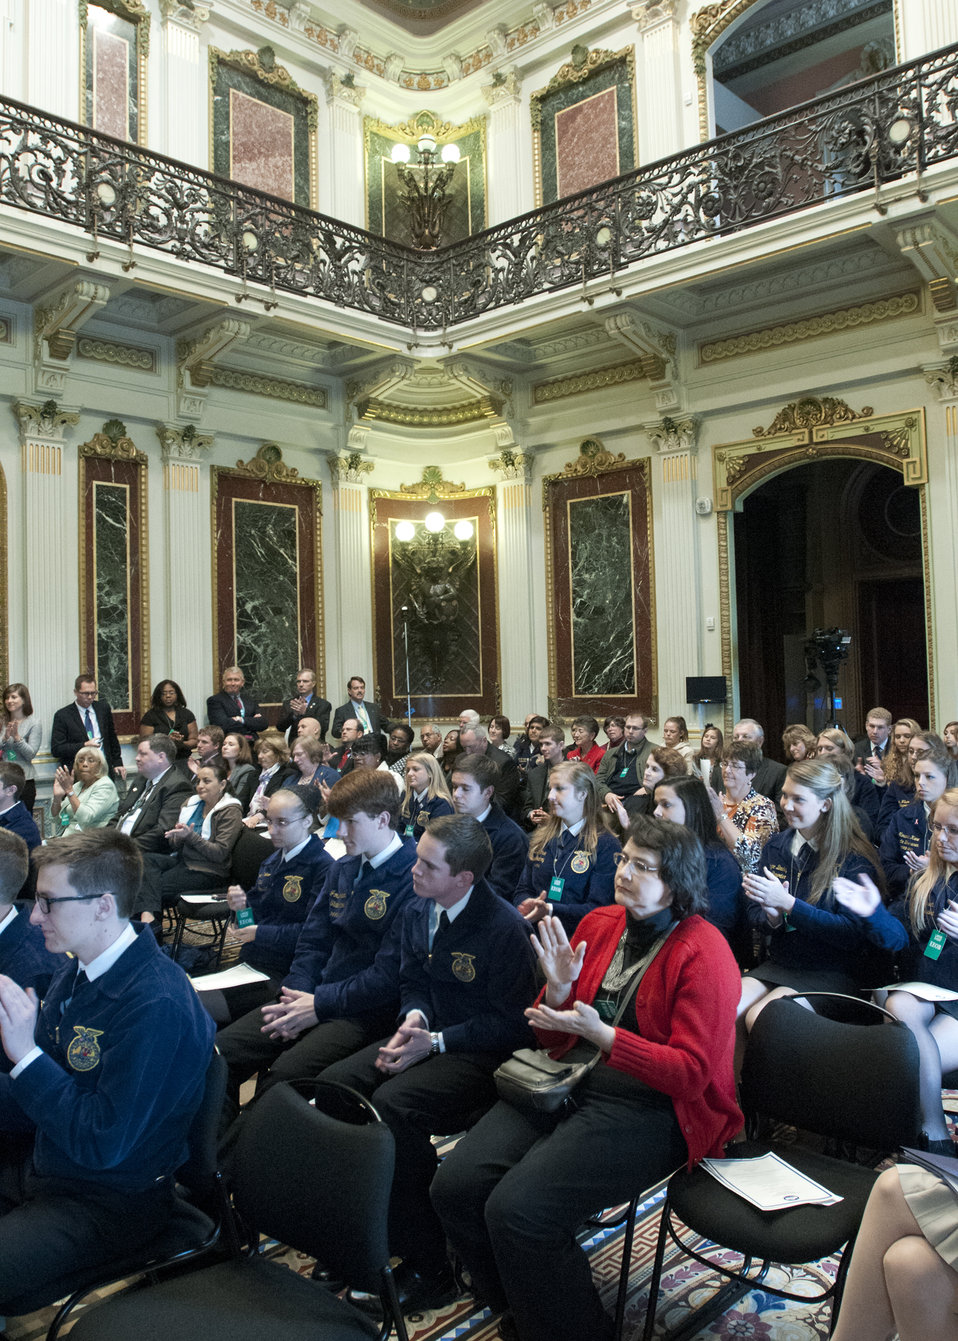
12 members of FFA and 4-H are recognized as Champions of Change at the Executive Office Building in Washington, D.C. on Tuesday, Oct. 9, 2012. The Champions of Change program was created to honor ordinary Americans doing great work in their communities. Each week, a different sector is highlighted and groups of Champions, ranging from educators, entrepreneurs and community leaders, are recognized for the work they are doing to serve and strengthen their communities.